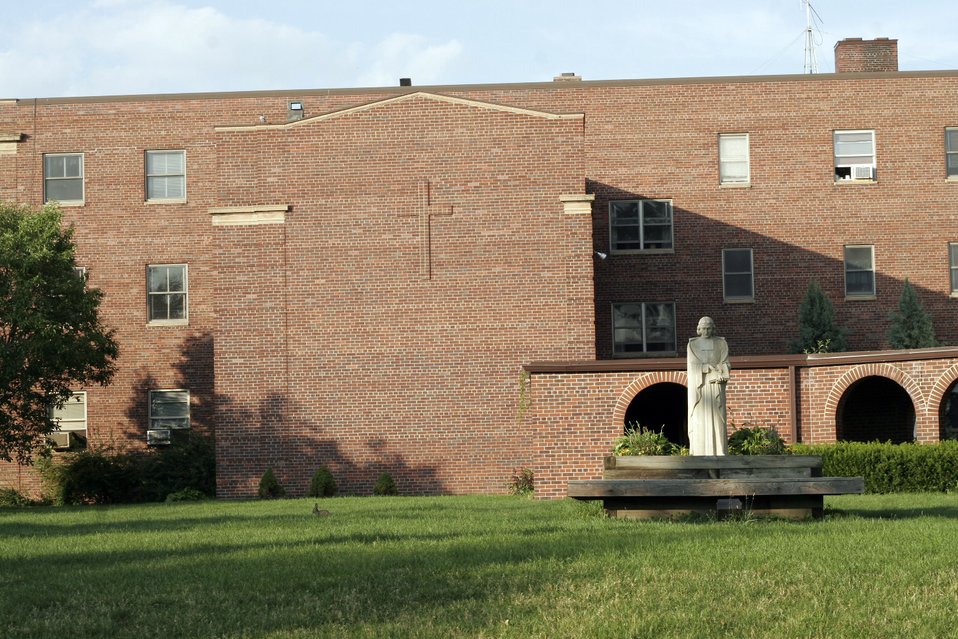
A statue of Saint John the Baptist, on the site of the former 'C' building in Founders Park at DeLaSalle High School on Nicollet Island in Minneapolis